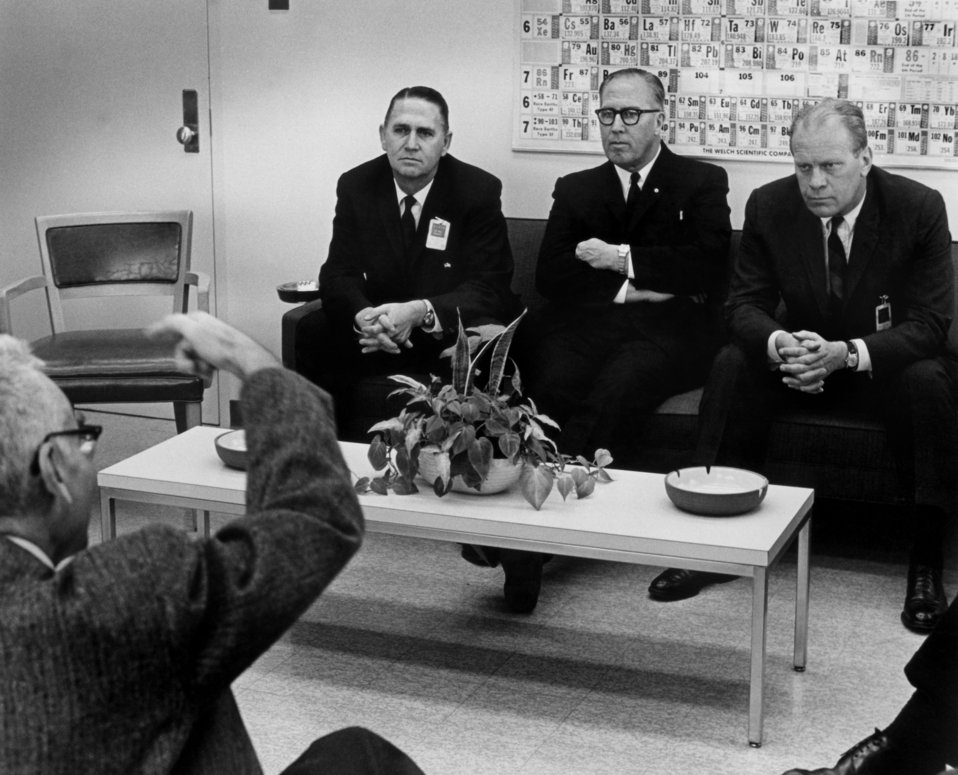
Dr. Alvin Weinberg talks to Congressman John Duncan, Dr. C.E. Larson, Congressman Gerald Ford at Oak Ridge National Lab.

65-0697-26 DOE photo by Ed Westcott

Dr. Alvin Weinberg talks to Congressman John Duncan, Dr. C.E. Larson, Congressman Gerald Ford at Oak Ridge National Lab. Oak Ridge Tennessee 12-9-1965